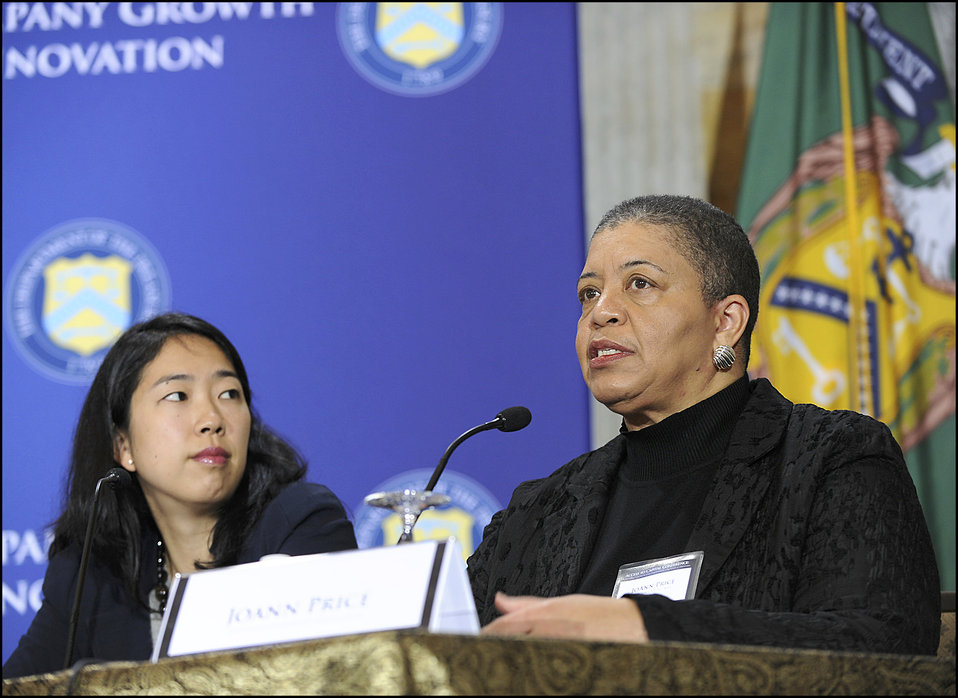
Access to Capital Conference

Ann Miura-Ko, Partner at Floodgate Capital and Lecturer at Stanford University, watches as Joann Price, Co-founder and Partner at Fairview Capital, talks about her experiences.